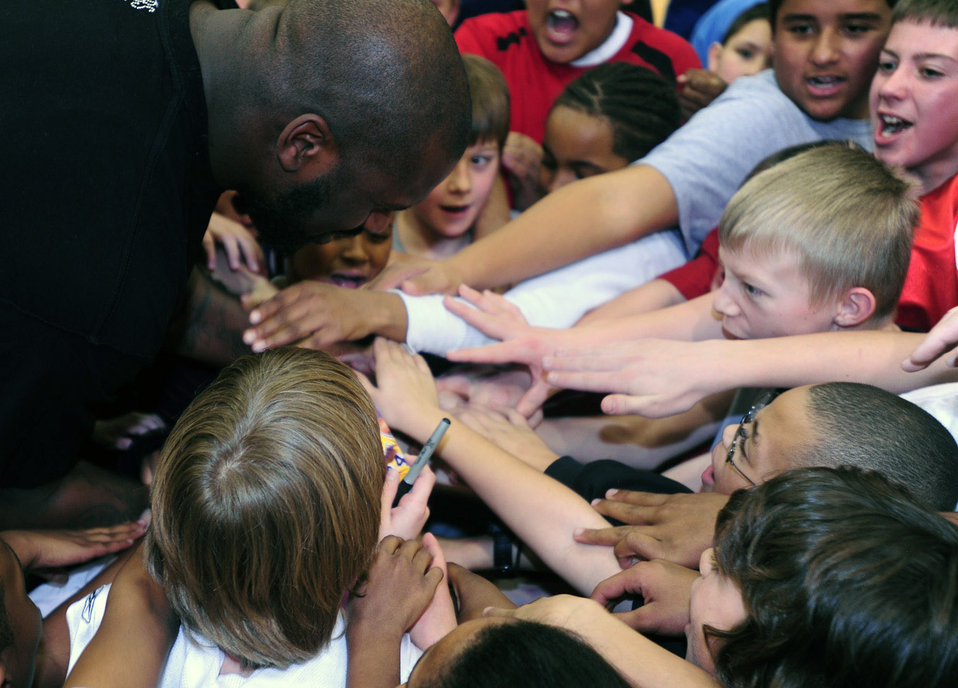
Shaq shares hoops clinic with Buckley children

Shaquille O'Neal of the Phoenix Suns gets children pumped up with a